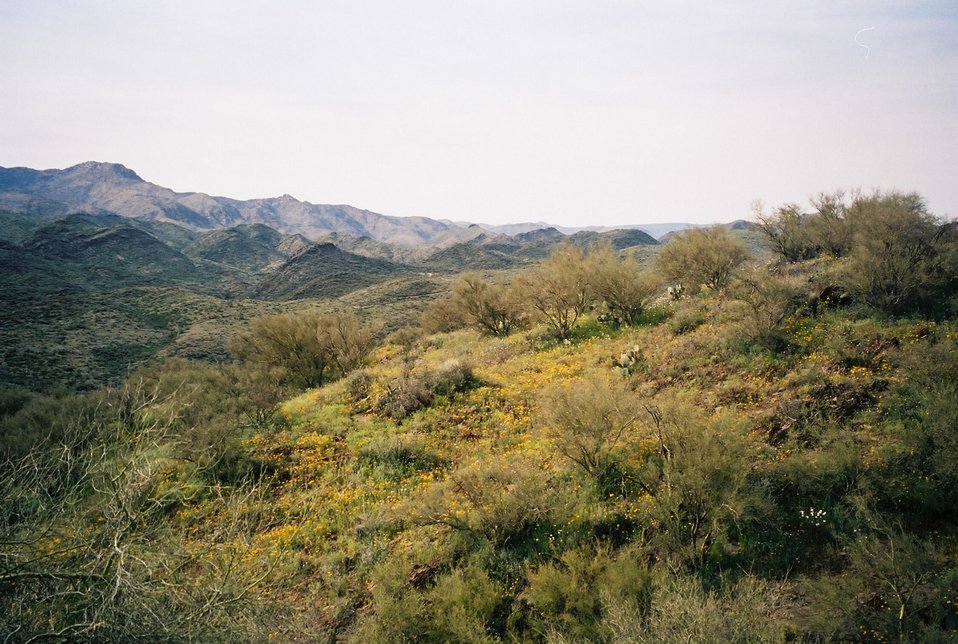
President Bill Clinton designated the Agua Fria National Monument in January of the year 2000.